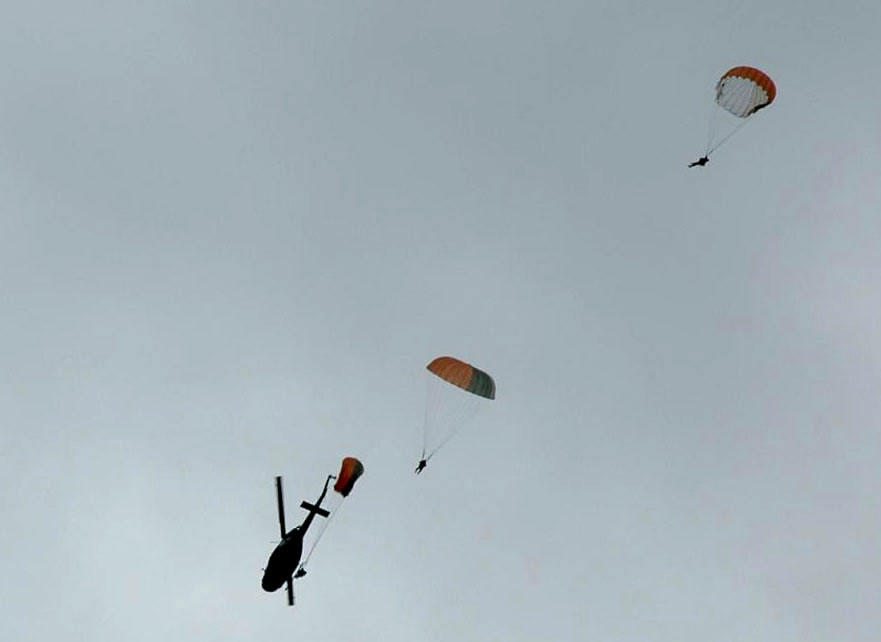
Rescue flight crews provide help from above

Students practice static line parachuting techniques from a UH-1N Huey assigned to the 36th Rescue Flight at Fairchild Air Force Base, Wash. The jumpers are performing demo drops for students attending survival school. The 36th RQF supports this school, along with survival, evasion, resistance and escape specialist training, and also responds to civilian search and rescue requests through the National Search and Rescue Plan.